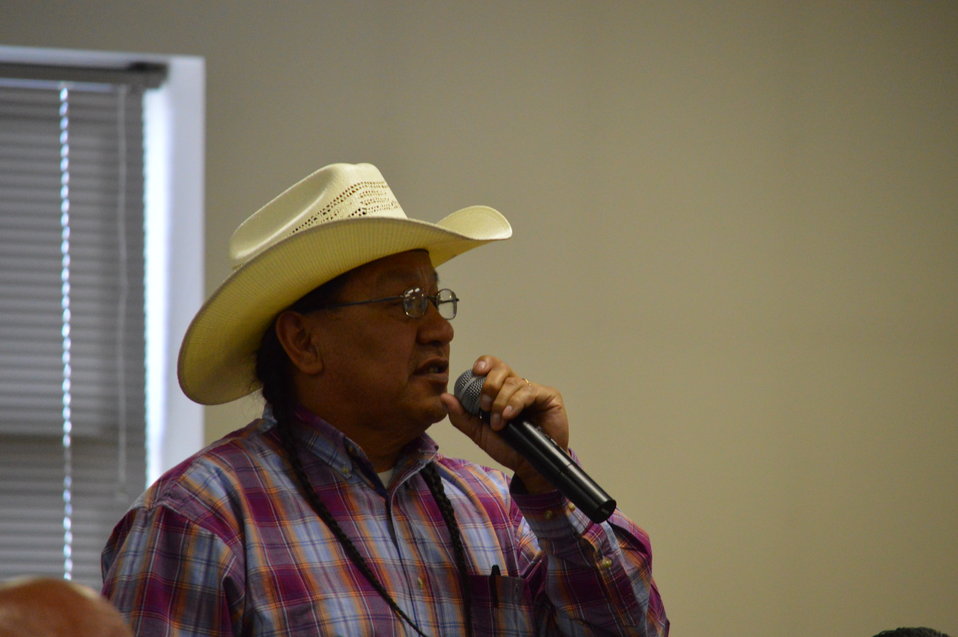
Eagle Summit III

Questions and comments are raised at the Eagle Summit III in Denver, Colorado on March 20, 2014 at the Rocky Mountain Arsenal National Wildlife Refuge.